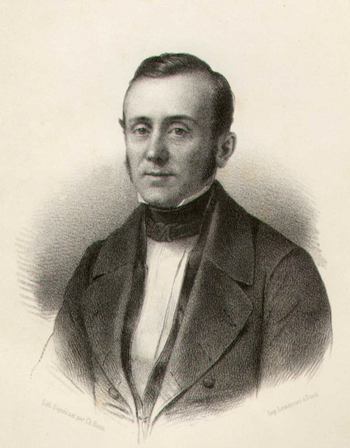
Billault, Adolphe - 1